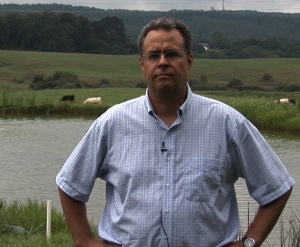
USFWS biologist Jess Jones